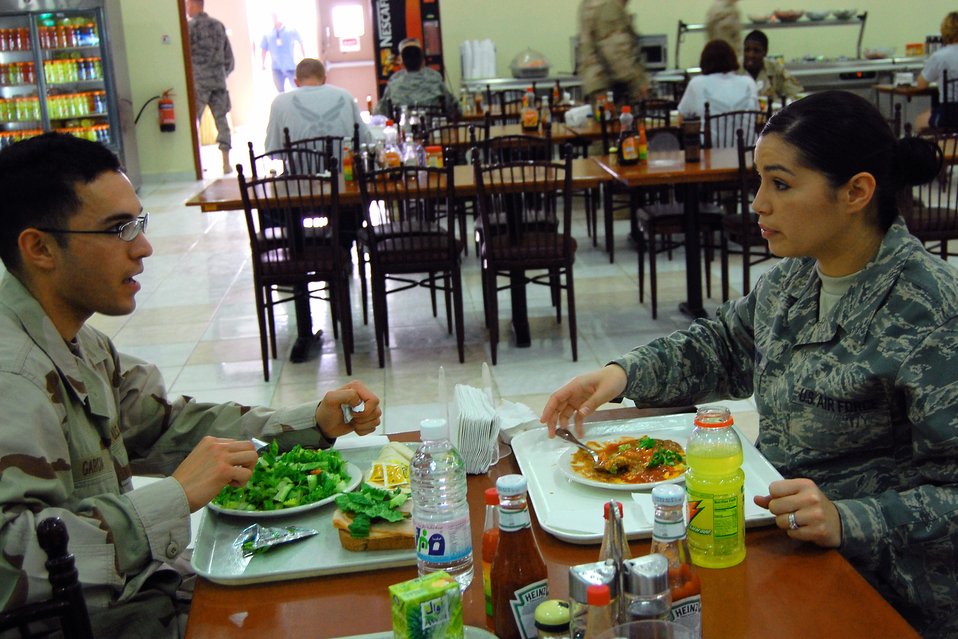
A tradition of honor; Service members share pride in service

Senior Airman Christina Stimpson and her cousin, Navy Seaman Anthony Garcia, spend the afternoon reminiscing and catching up at a base in Southwest Asia. Both were deployed in support of the war on terror. Airman Stimpson is a financial management specialist deployed from Robins Air Force Base, Ga. Seaman Garcia is a hospital corpsman from Naval Air Station Patuxent River, Md.